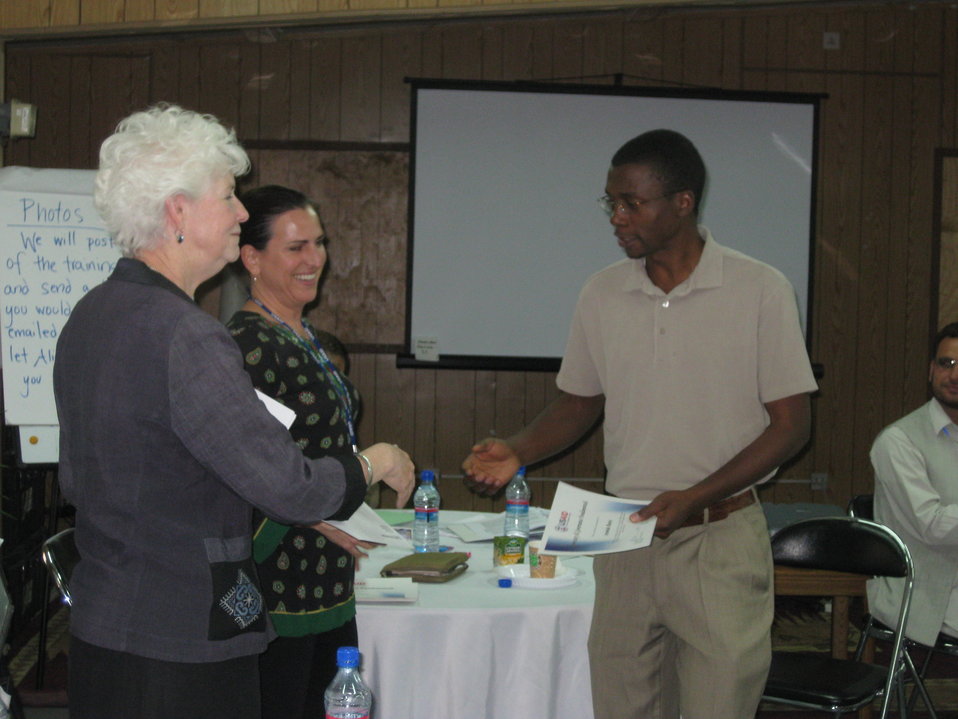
Afghan Youth Voices 051